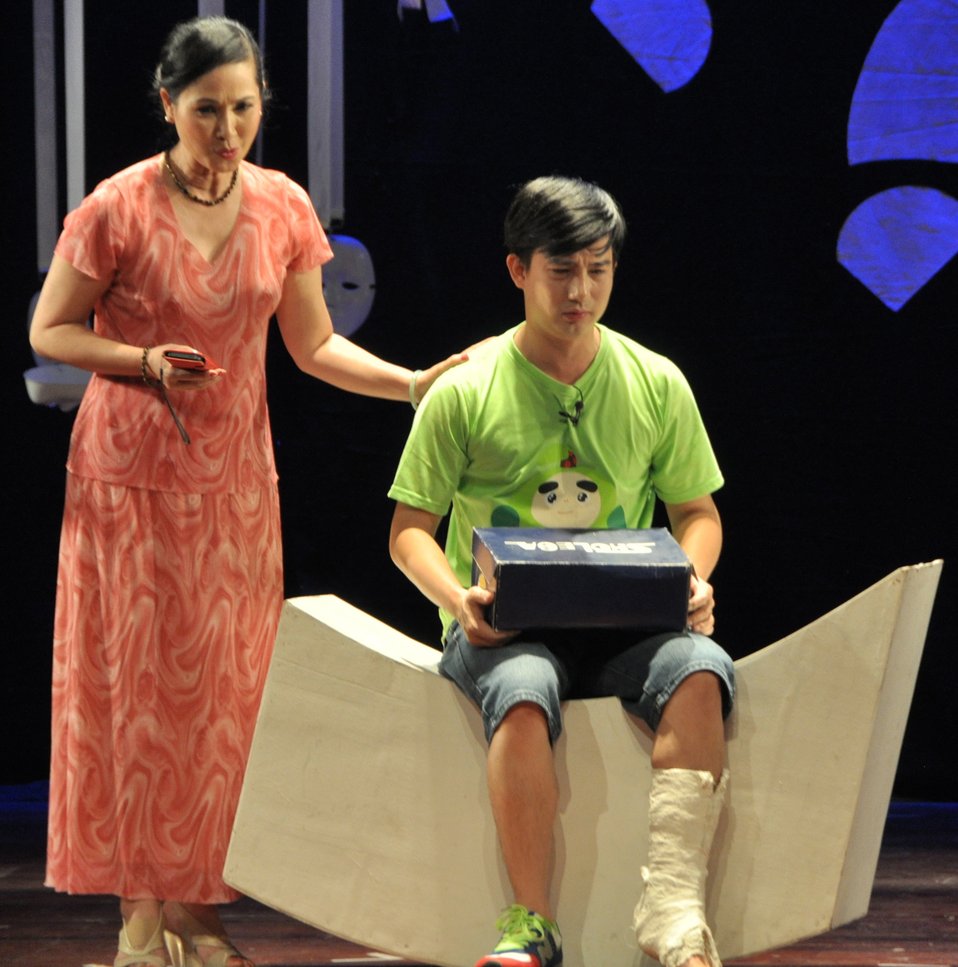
PEPFAR Musical Questions and Exclamations

Hanoi, May 17, 2013